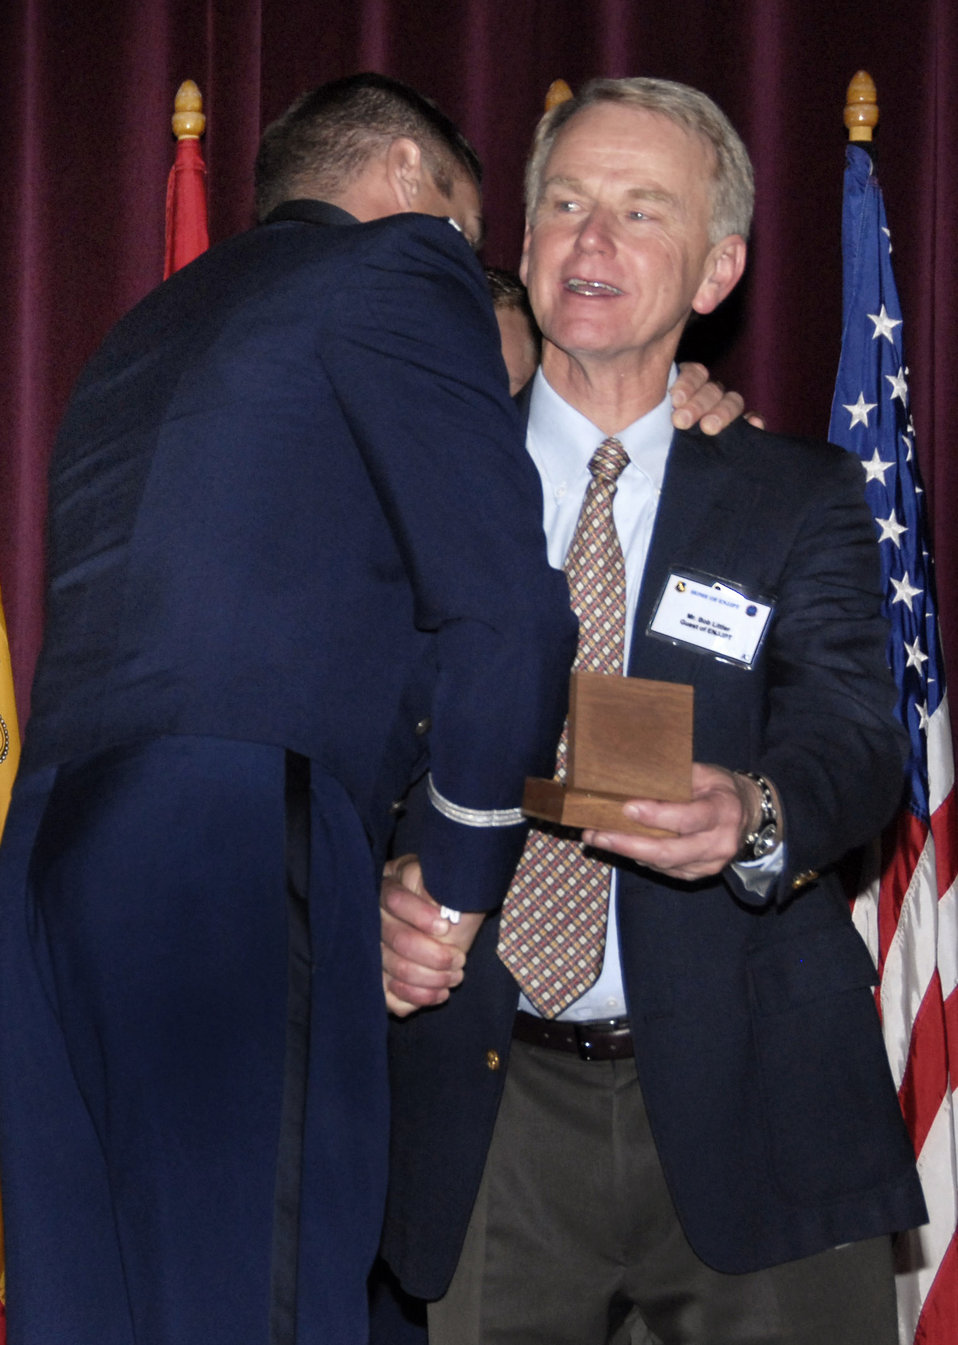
Airman honored, awarded wings posthumously

Second Lt. Ryan Bodenheimer shakes Bob Littler's hand and gives him a hug after presenting him with his son's, 2nd Lt. Alec Littler, wings posthumously during a ceremony at the Euro-NATO Joint Jet Pilot Training Program graduation Nov. 7 at Sheppard Air Force Base, Texas. Lieutenant Littler was killed May 1 during a T-38 Talon training mission when the aircraft crashed. He would have graduated with Class 08-08.